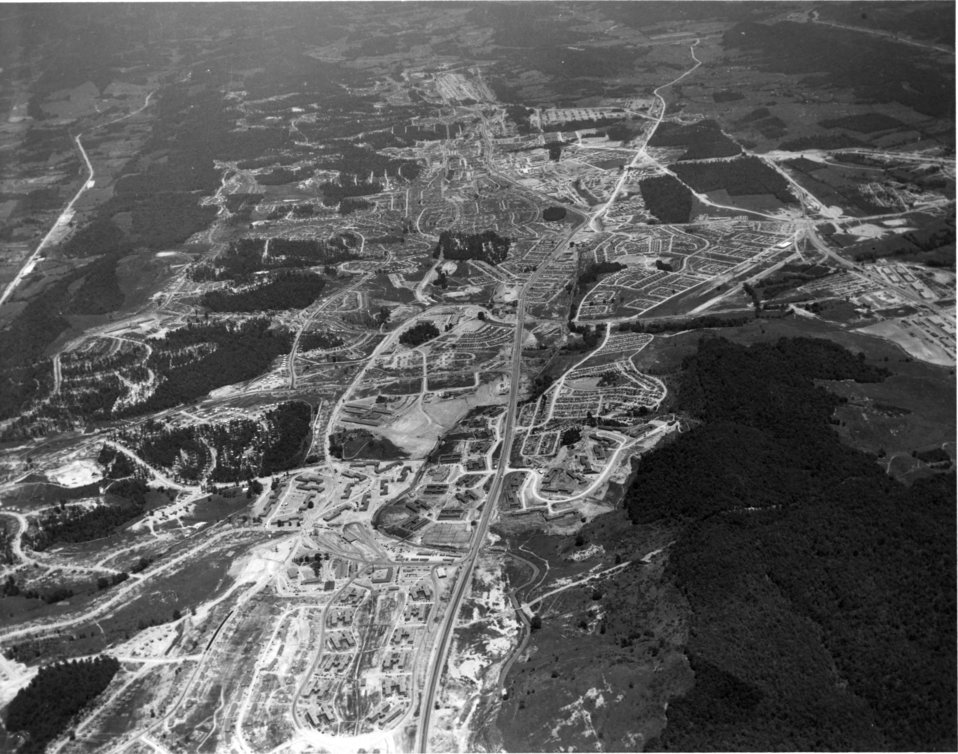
Aerial of Oak Ridge